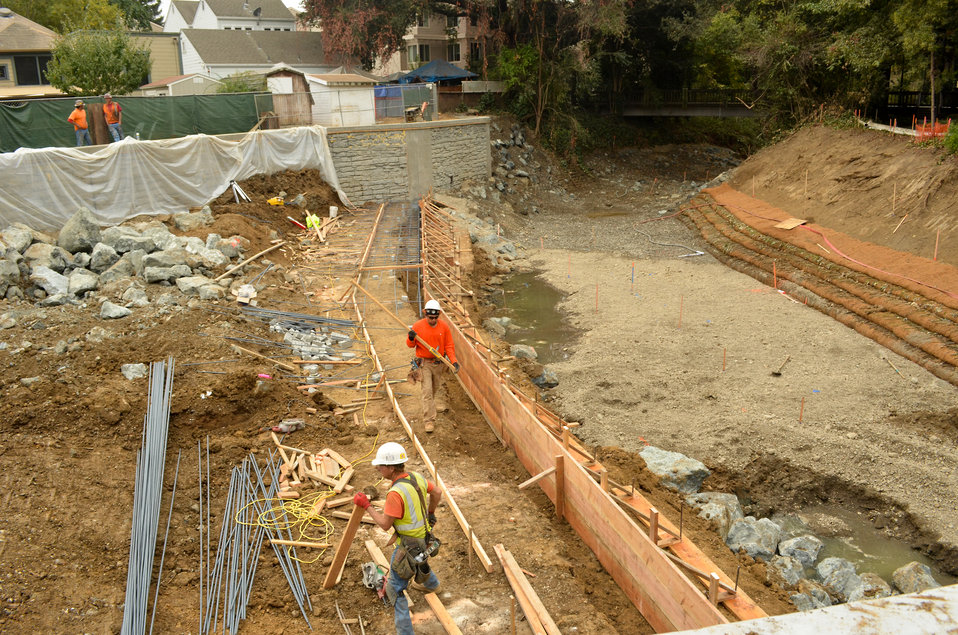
Finishing up box culverts in Napa Creek

Workers build the entrance to a new set of box culverts in Napa Creek in Napa, Calif., Oct. 12, 2012. The culverts will divert high water directly from the creek to Napa River and away from nearby homes and businesses. A joint effort between the U.S. Army Corps of Engineers, the city of Napa and the Napa County Flood Control and Water Conservation District to reduce the city's flood risk, the $14.8 million Napa Creek project is funded by the American Recovery and Reinvestment Act of 2009. The project is scheduled to be completed by the end of October, ahead of California’s rainy season.